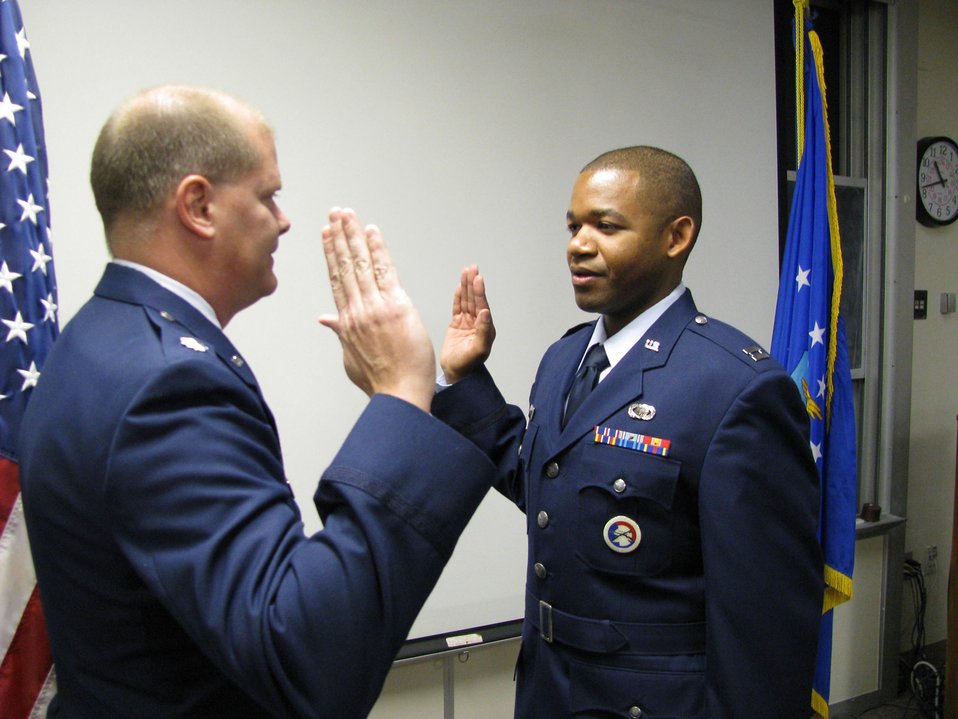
Brooks to serve as initial venue to test fit new AF service coat

Capt. Jonathan Pellum recites the oath of office I a ceremony officiated by Lt. Col. Gary Salmons here. The captain used his promotion ceremony to showcase the proposed Air Force Heritage Service Dress Coat. Captain Pellum is the heritage coat program manager, 648th Aeronautical Systems Squadron at Brooks-City Base, Texas.